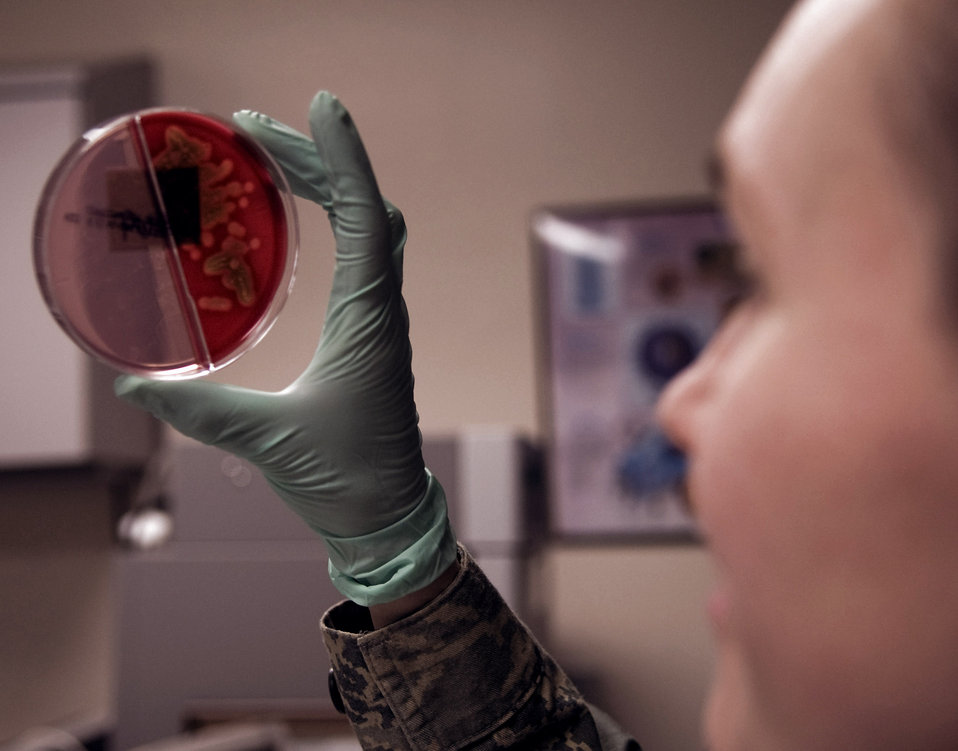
Blood work

Staff Sgt. Karla Workman views a urine culture March for bacterial growth March 4 at Eielson Air Force Base, Alaska. Cultures are reviewed routinely in the medical laboratory for signs of disease of bacterial growth. Sergeant Workman is a 354th Medical Group clinical lab technician.